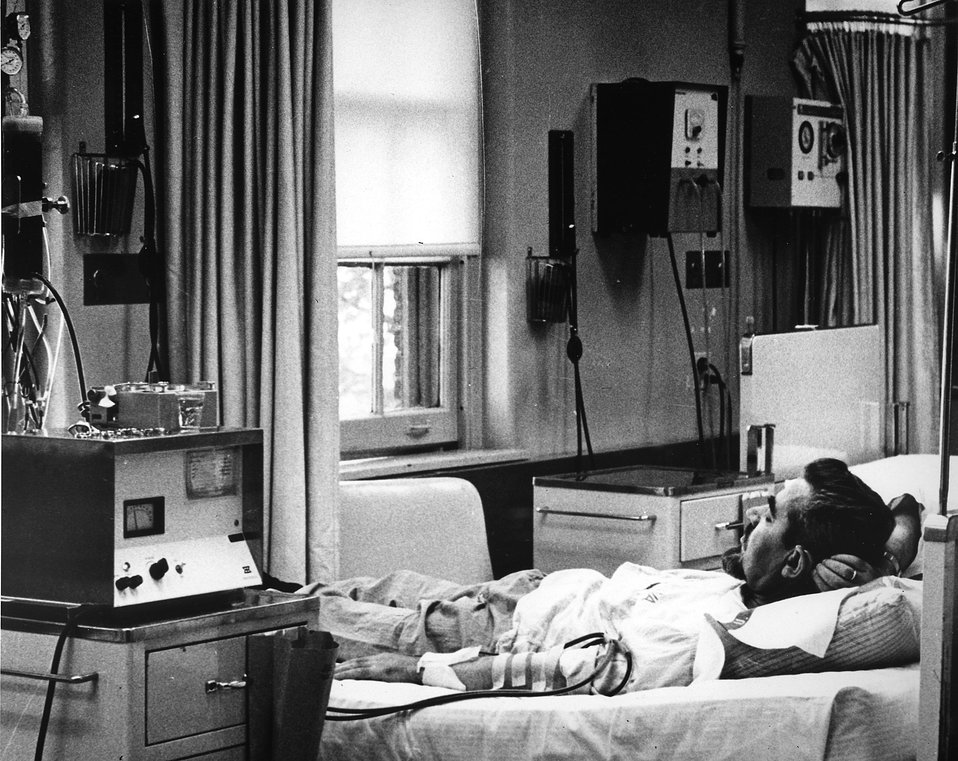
A patient at the Veteran's Administration Hospital participates in the clinical testing of the Argonne Hemodialyzer.
c.1970